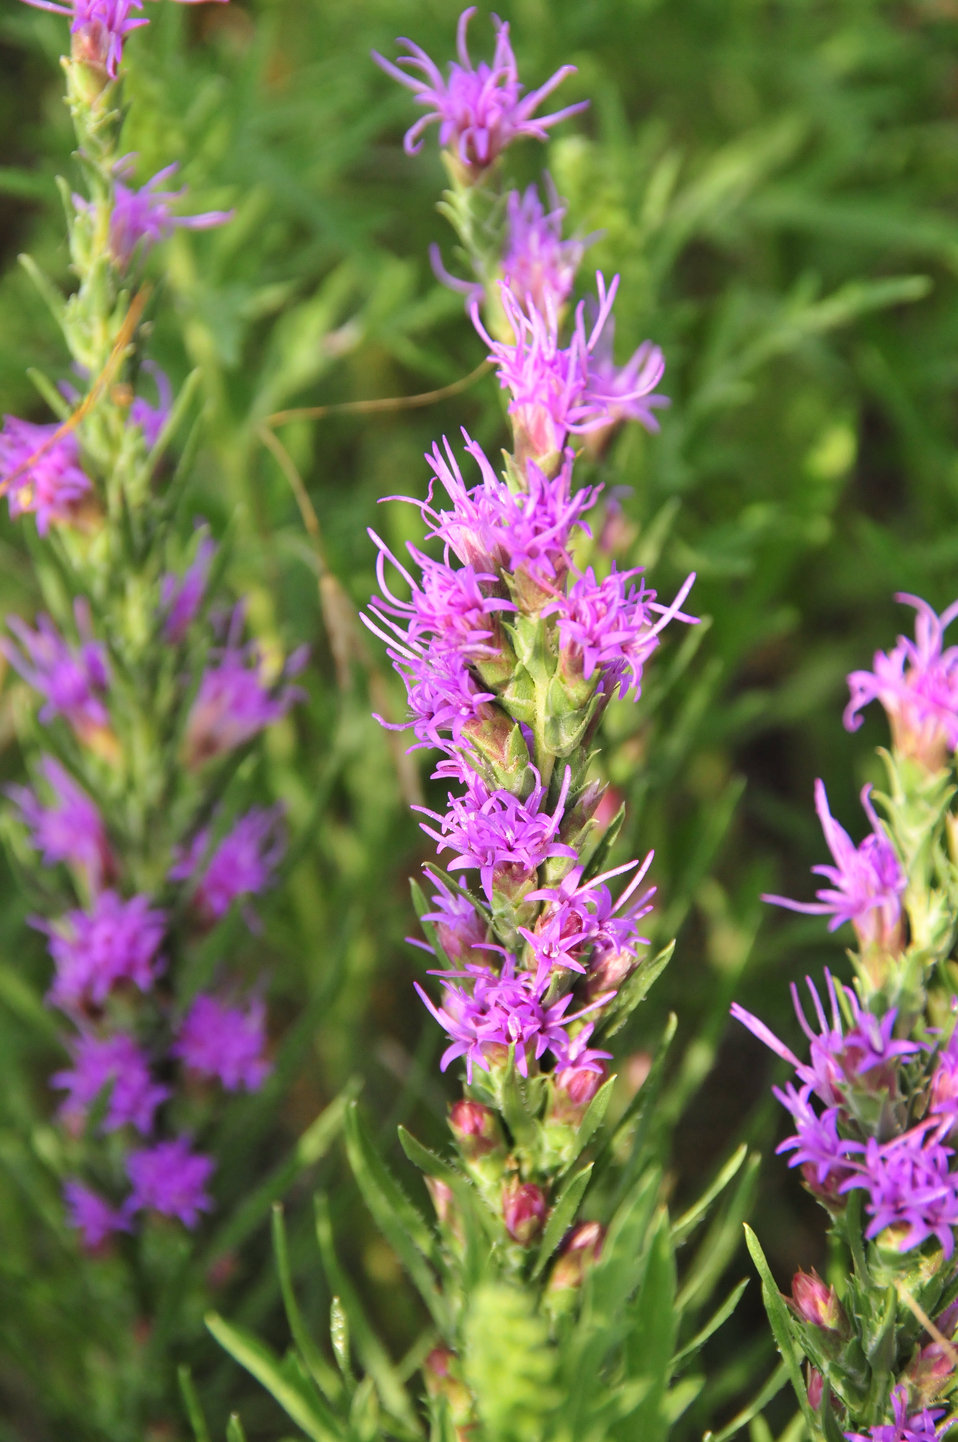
Blazingstar (Liatris punctata) on Lacreek National Wildlife Refuge

Blazingstar colors the mixed grass prairie on Lacreek National Widllife Refuge.